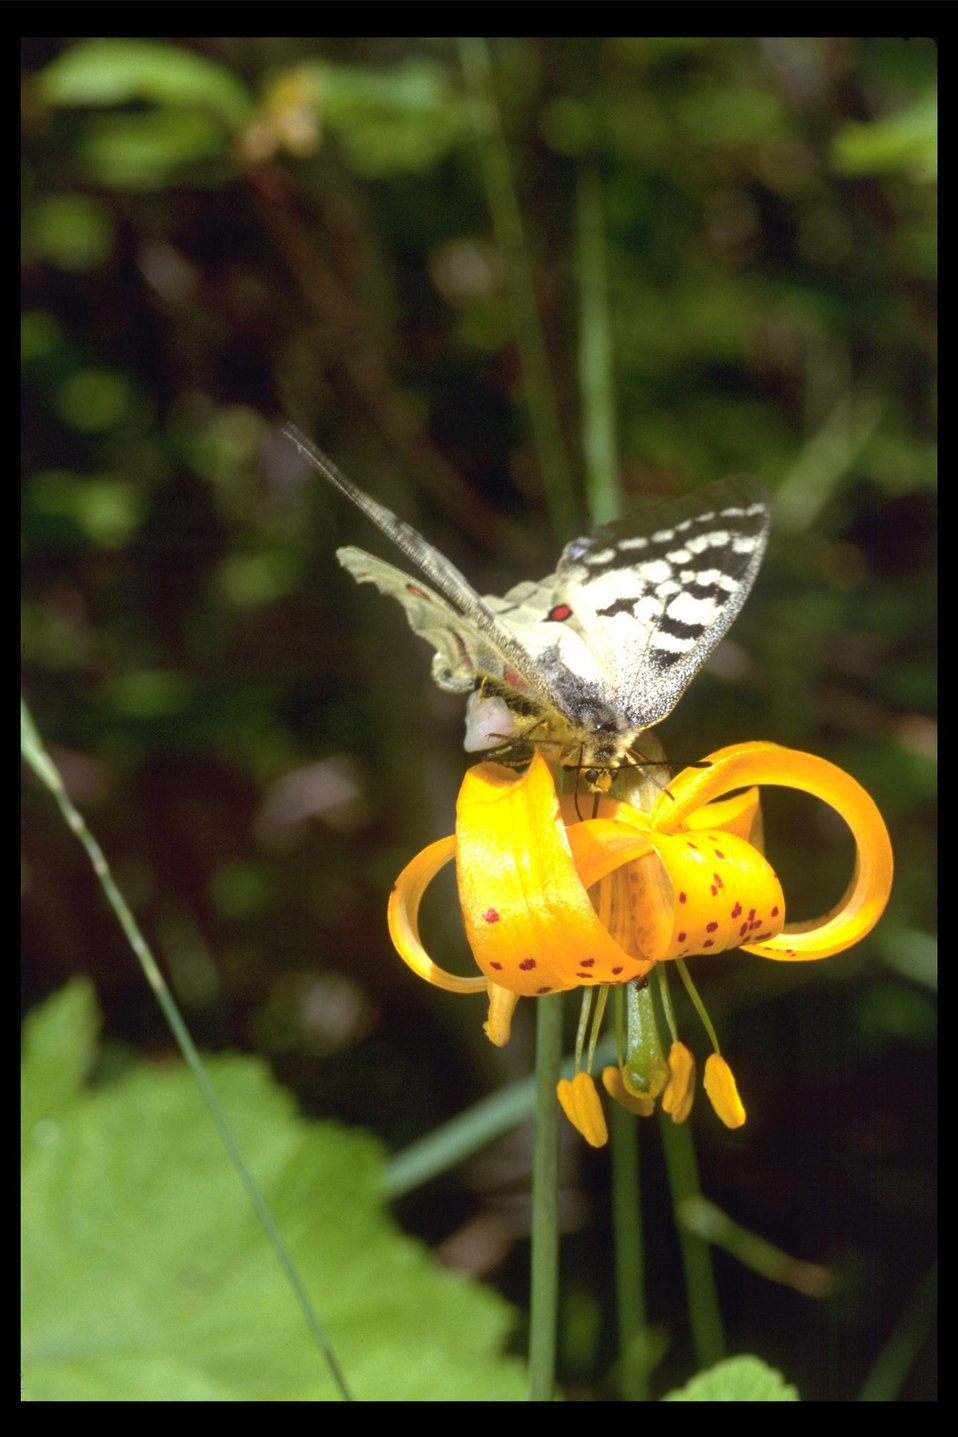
Tiger Lily (Lilium columbianun) with butterfly at Upper Trail Creek.